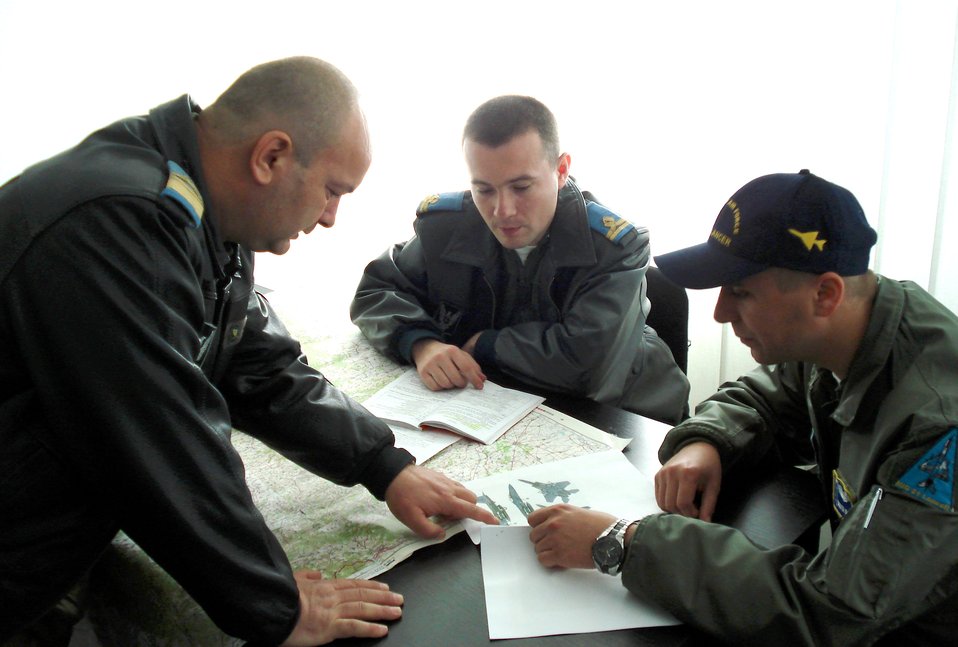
Exercise Sniper Lance 2007

Captain Commander Dobre Constantin and First Lieutenants Mihaita Marin and Radu Paraschiv discuss F-15C and MIG 21 flight paths during Sniper Lance 2007, an exercise with more than 200 Airmen from United States Air Forces in Europe. The exercise, which includes Romanian MIG-21s from the nearby 86th Air Base, F-15Cs from Royal Air Force Lakenheath and KC-135s from RAF Mildenhall ends May 4.